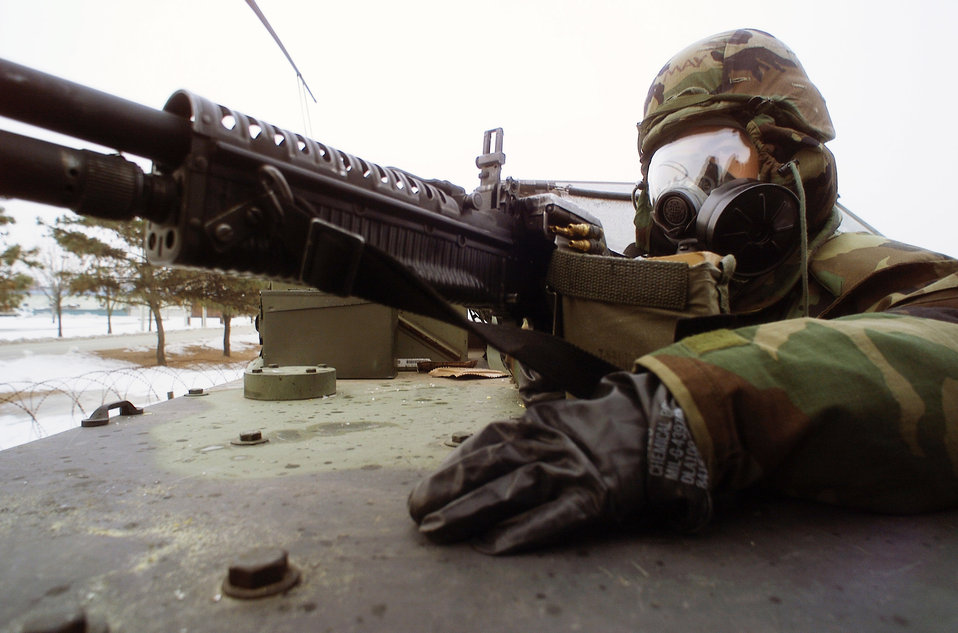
Armed and ready

OSAN AIR BASE, South Korea -- Airman 1st Class Matthew May, 51st Security Forces Squadron, mans an M-60 machine gun at a defensive firing position during the early morning hours of Osan's Initial Response Readiness Exercise/Combat Employment Readiness Exercise.